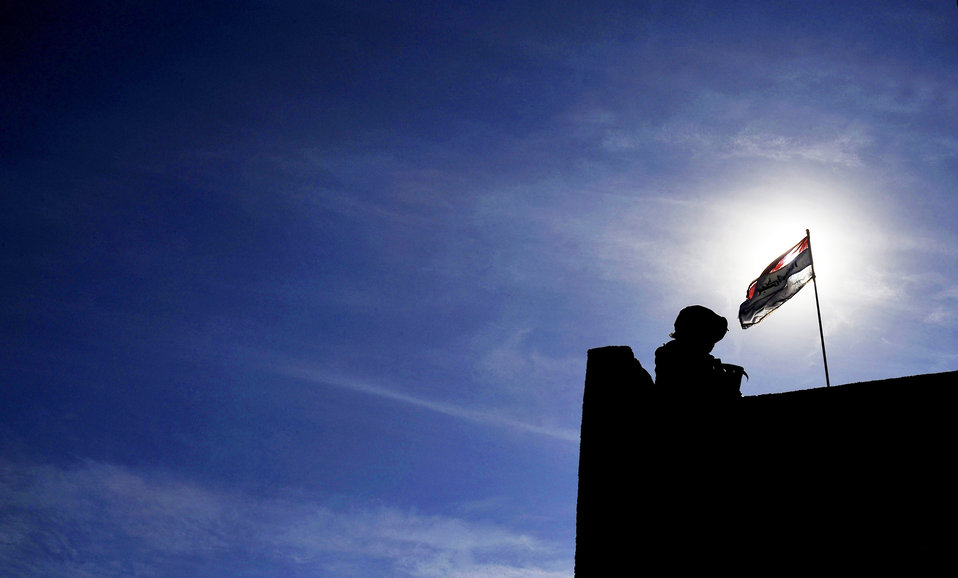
Airmen mentor Iraqi police officers

Senior Airman Joseph Mejia provides security at a local Iraqi police station during a meeting, Nov. 15, 2009, at Baghdad, Iraq. Airman Mejia is a 732nd Expeditionary Security Forces Squadron Det 2 fire team member deployed to Baghdad, Iraq,